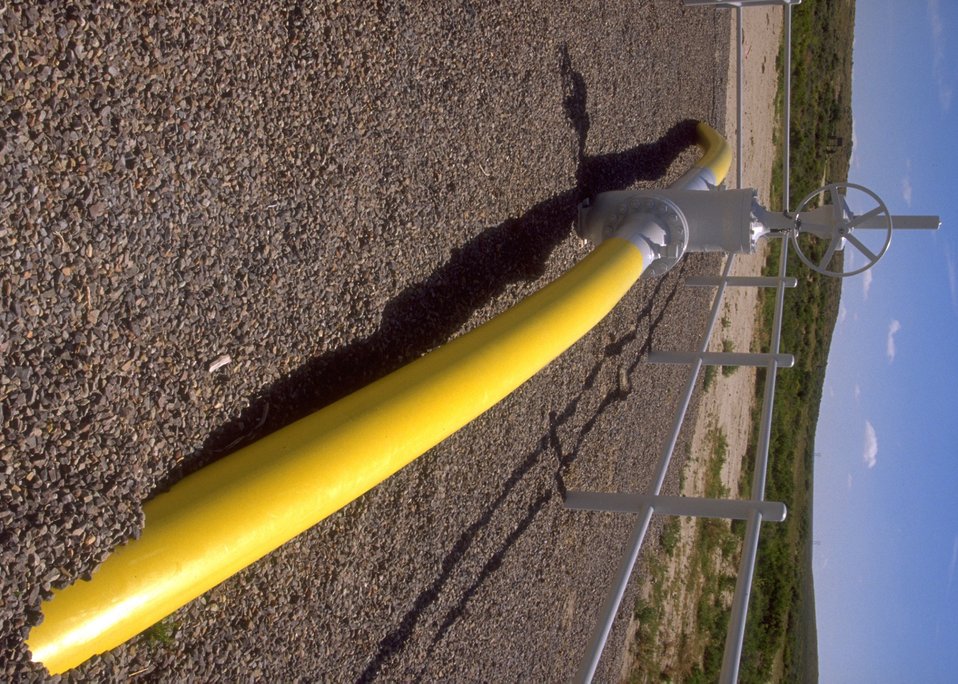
Natural gas pipeline along the Oregon Trail west of Casper, Casper Field Office.